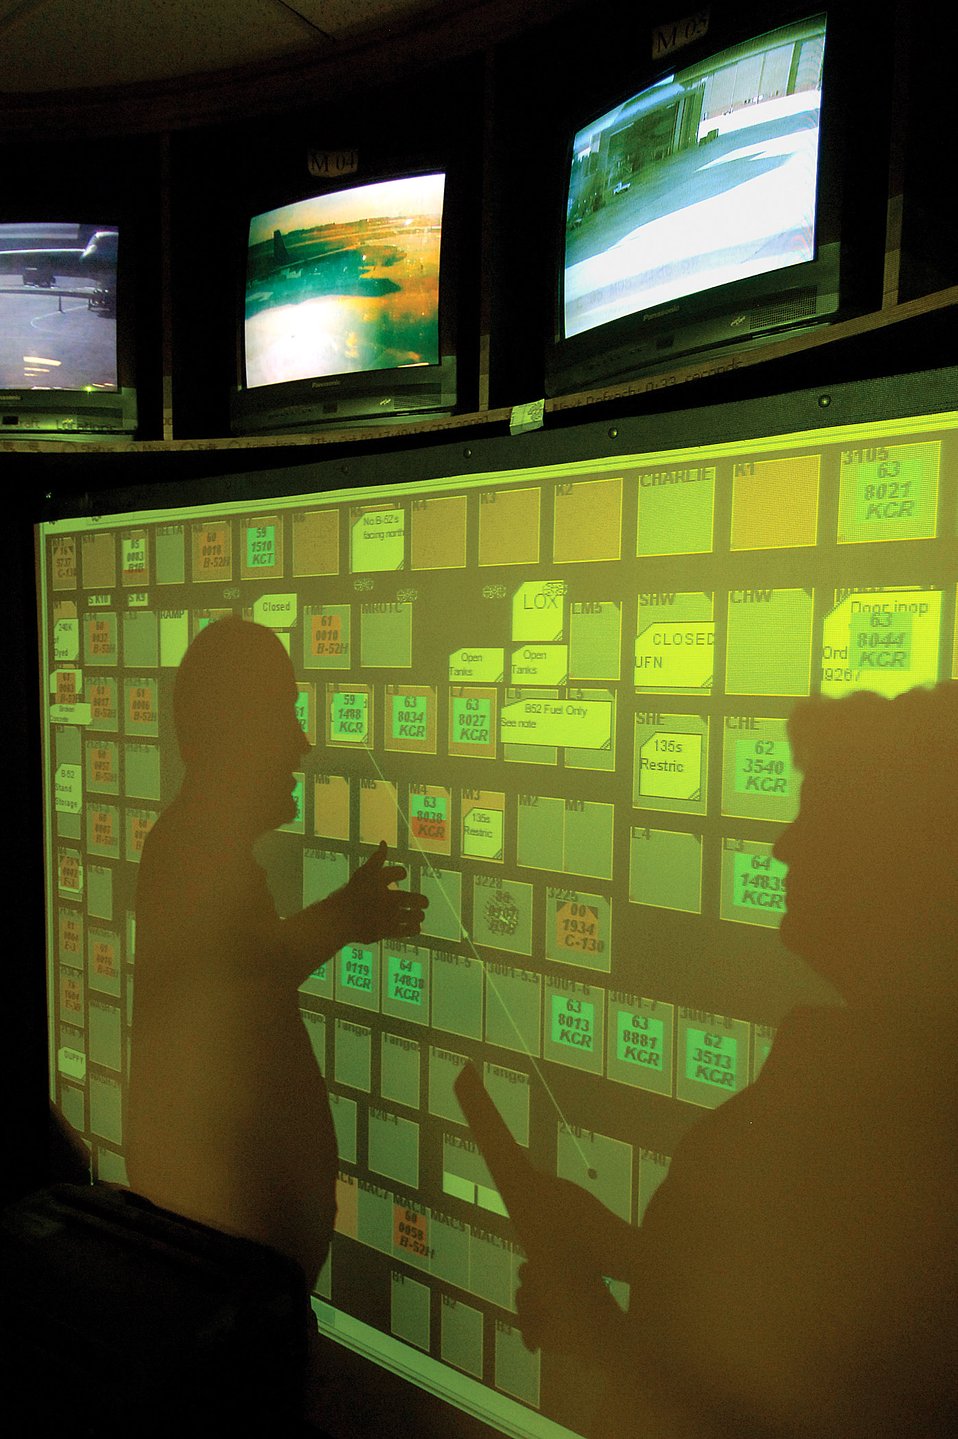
24-hour Tinkering: Maintenance around the clock

Members of the 76th Maintenance Wing's Maintenance Operations Center overlook maintenance documents Oct. 2 at Tinker Air Force Base, Okla. Staffed around the clock, controllers use a wall of monitors and a board of blinking, moving squares to document aircraft work and control access to ramp areas.